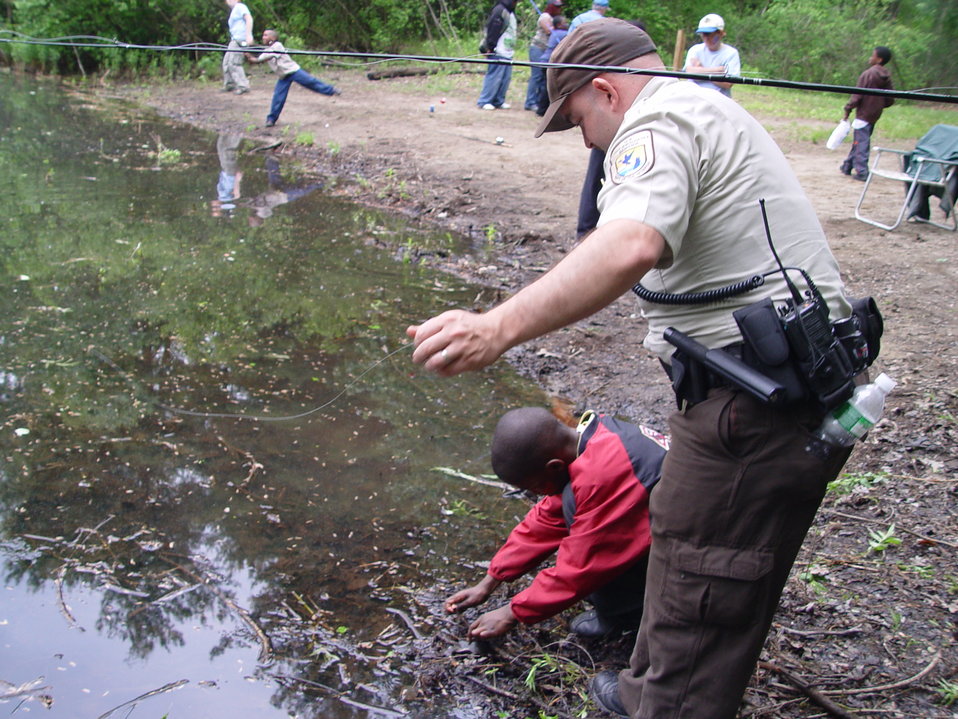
Great Meadows Fishing Day 2010

Great Meadows National Wildlife Refuge in Massachusetts holds an annual fishing day where all anglers -- beginners and experienced -- join refuge staff and other experts for a day filled with fishy fun!

Visitors learn how to fly-cast, spin-cast, and even tie your own fly. All equipment and instruction is provided, and there are always games, crafts, music and face painting as well.